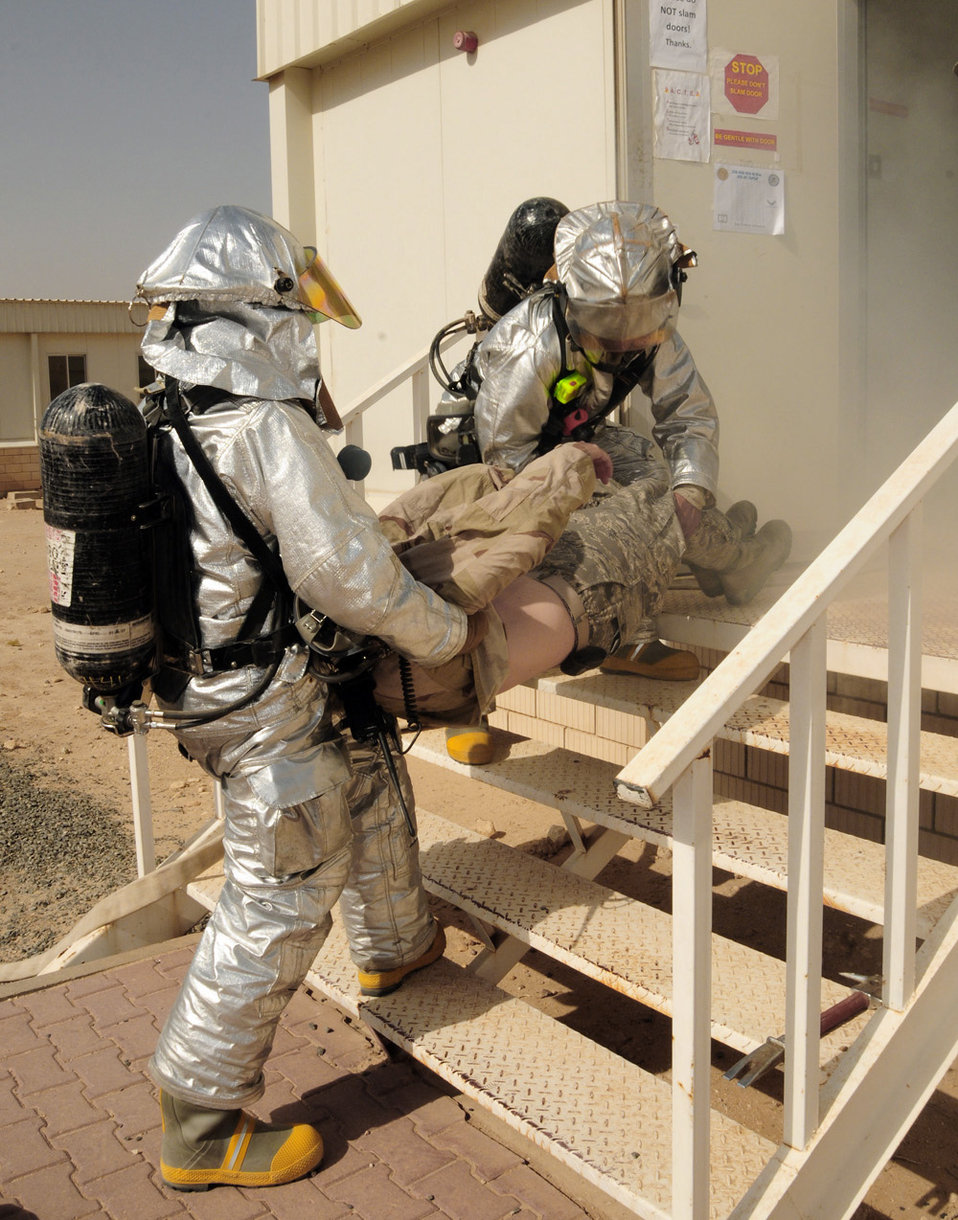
386th AEW conducts dorm fire exercise

Firefighters from the 386th Expeditionary Civil Engineer Squadron removes a simulated victim from a simulated dorm fire using the two-man fore-and-aft carry during a June 22 exercise at an air base in Southwest Asia.